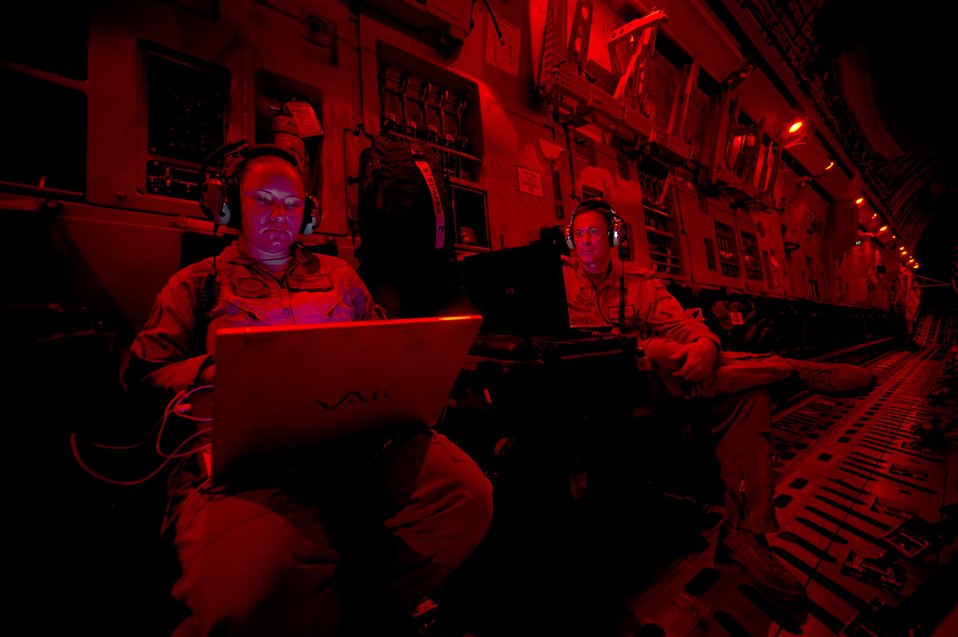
Just dropping by...

Staff Sgt. Jenna Kramer and Canadian Air Force Warrant Officer David Daly, C-17 Globemaster III loadmasters assigned to the 816th Expeditionary Airlift Squadron, update records March 5, 2011, after an air delivery mission over Afghanistan. The C-17 aircrew delivered fuel and supplies to a remote forward operating base there.